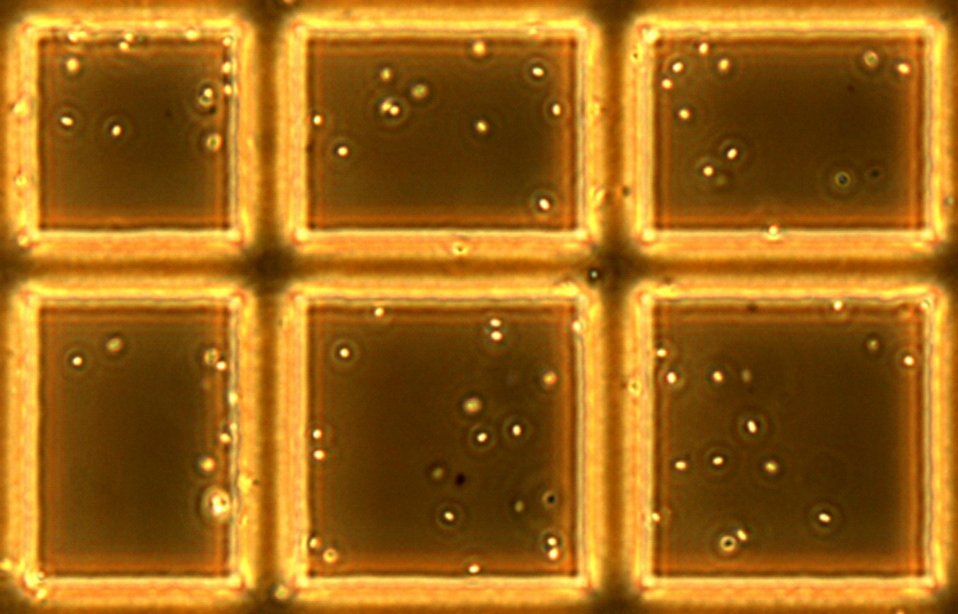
Anthrax bacillus spores viewed under a microscope in a cell chamber to measure concentration.